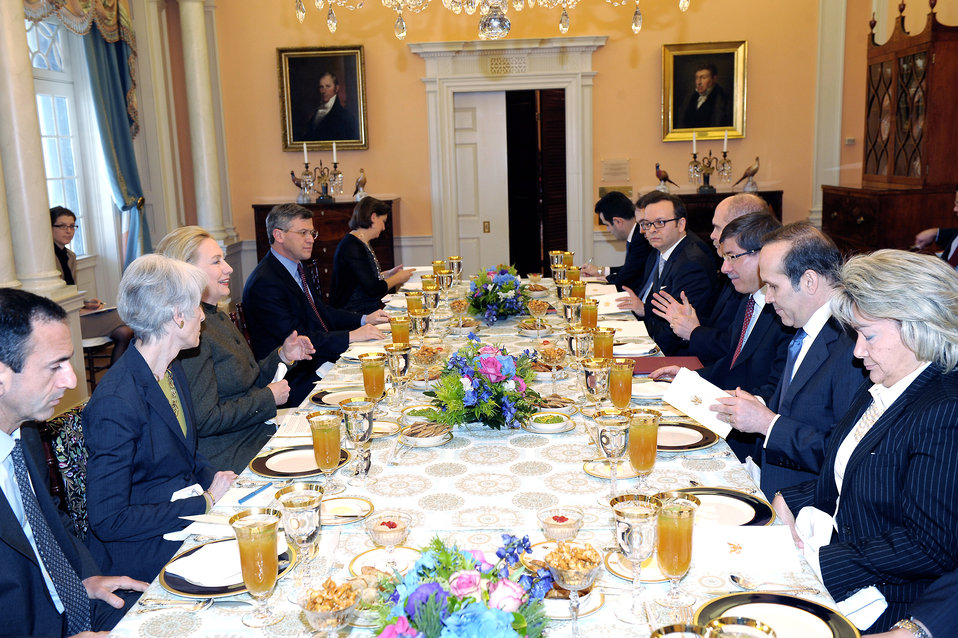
Secretary Clinton Holds Working Lunch With Foreign Minister Davutoglu of Turkey

U.S. Secretary of State Hillary Rodham Clinton meets with Turkish Foreign Minister Ahmet Davutoglu at the U.S. Department of State in Washington, D.C., on February 13, 2012.